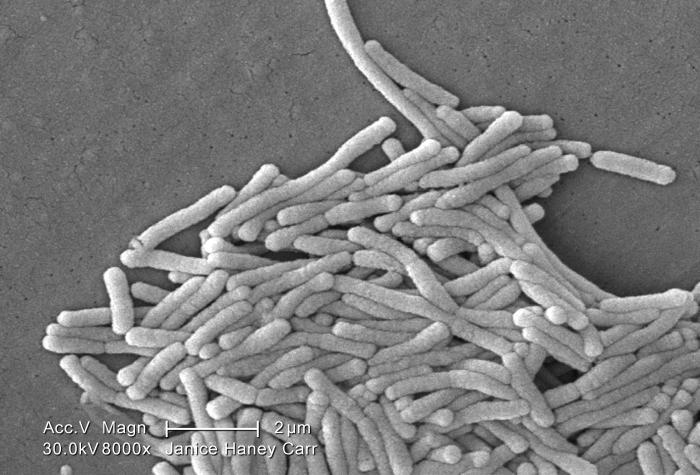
Under a moderately-high magnification of 8000X, this scanning electron micrograph (SEM) depicted a large grouping of Gram-negative Legionella pneumophila bacteria. Please see PHIL 11092 through 11152 for additional SEMs of these organisms, specifically PHIL 11150 for a colorized version of this image. Of particular importance, is the presence of polar flagella, and pili, or long streamers, which due to their fragile nature, in some of these views seem to be dissociated from any of the bacteria.